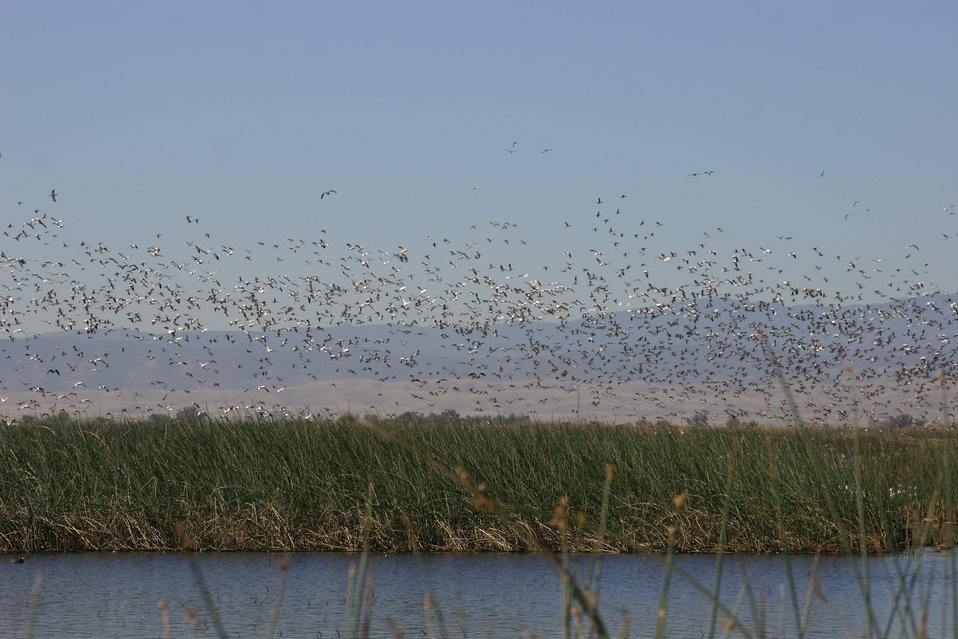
Waterfowl eruption

Thousands of snow geese and other waterfowl erupt from wetlands at Sacramento National Wildlife Refuge in October 2009.